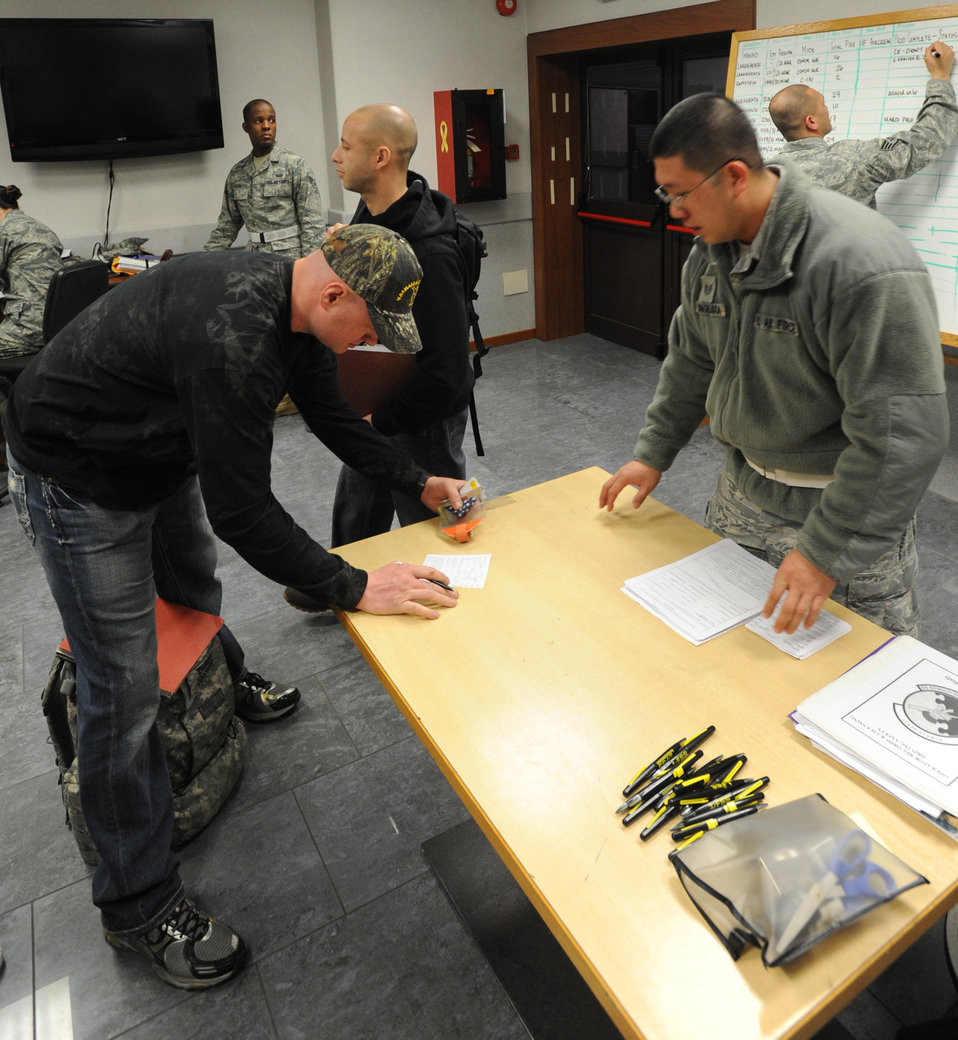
Inprocessing.

Airmen with the 31st Force Support Squadron inprocesses Airmen from Royal Air Force Lakenheath, United Kingdom, at Aviano Air Base, Italy, March 20, 2011, in support of Operation Odyssey Dawn. Joint Task Force Odyssey Dawn is the U.S. Africa Command task force established to support the larger international response to the unrest in Libya. A broad coalition of nations are partnering to enforce U.N. Security Council Resolution (UNSCR) 1973, which authorizes all necessary means to protect civilians in Libya under threat of attack by Qadhafi regime forces. JTF Odyssey Dawn is commanded by Admiral Samuel J. Locklear, III.